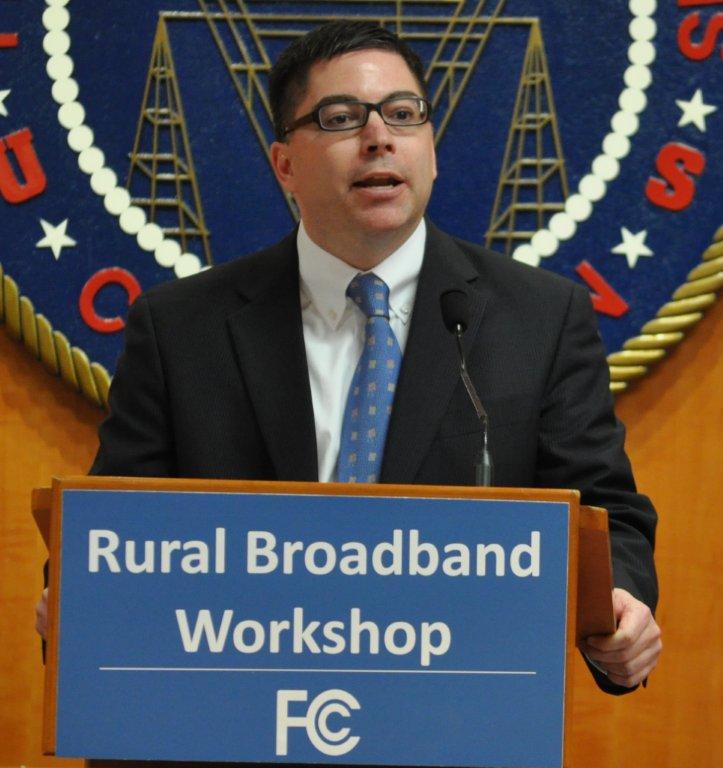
3.19.14 Rural Broadband Workshop

Commissioner O'Rielly speaking at the Rural Broadband Workshop.